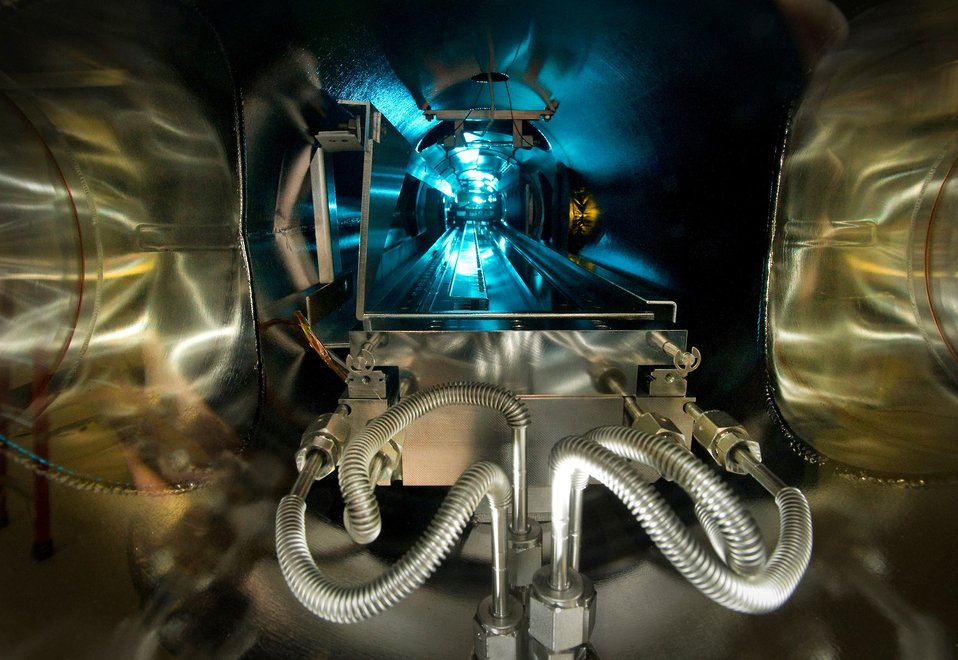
Photo of the Week: Repurposing the Xbox

At Brookhaven National Laboratory, scientists have developed a custom-built machine that can grow special lenses, one atomic layer at a time. The machine is as long as an entire room, and scientists use a reprogrammed Xbox controller to direct a transport car through the vacuum-sealed chamber (pictured). The transport car collects plasma-borne particles that form the lenses that will eventually be used to focus high-intensity x-ray beams to reveal the details of nano material structures.